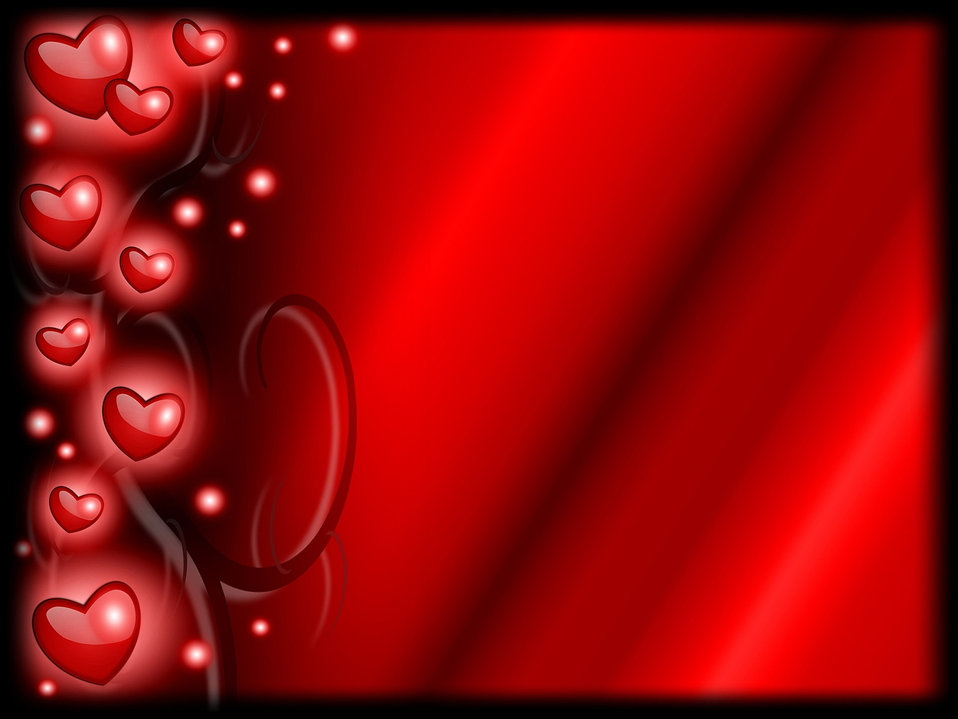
Hearts of love 3

With black border.